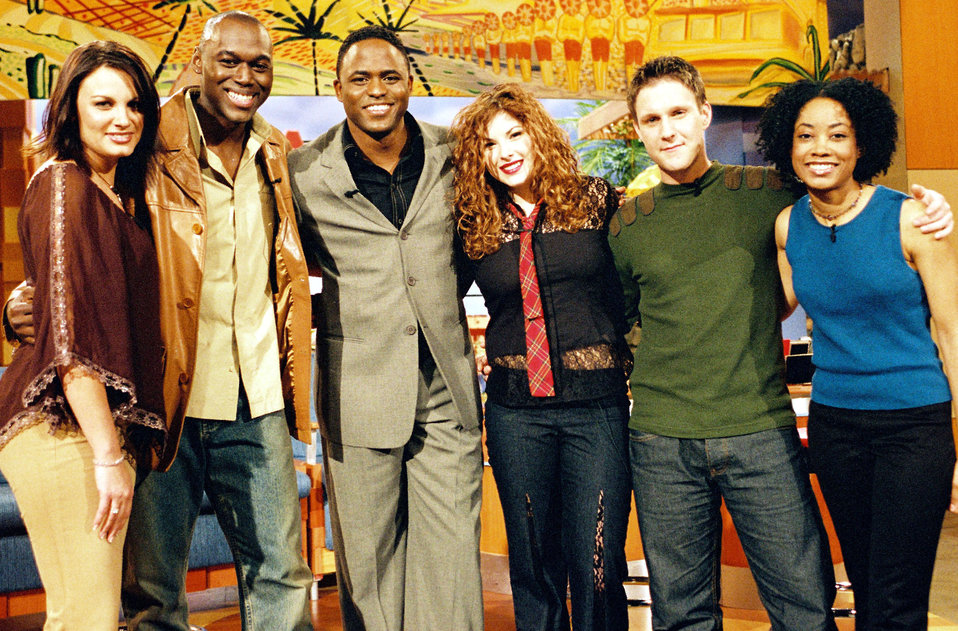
Air Force vocalist dazzles Hollywood

SCOTT AIR FORCE BASE, Ill. -- The five finalists in the